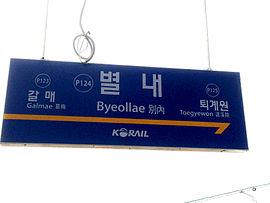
한국어: 별내역 역명판